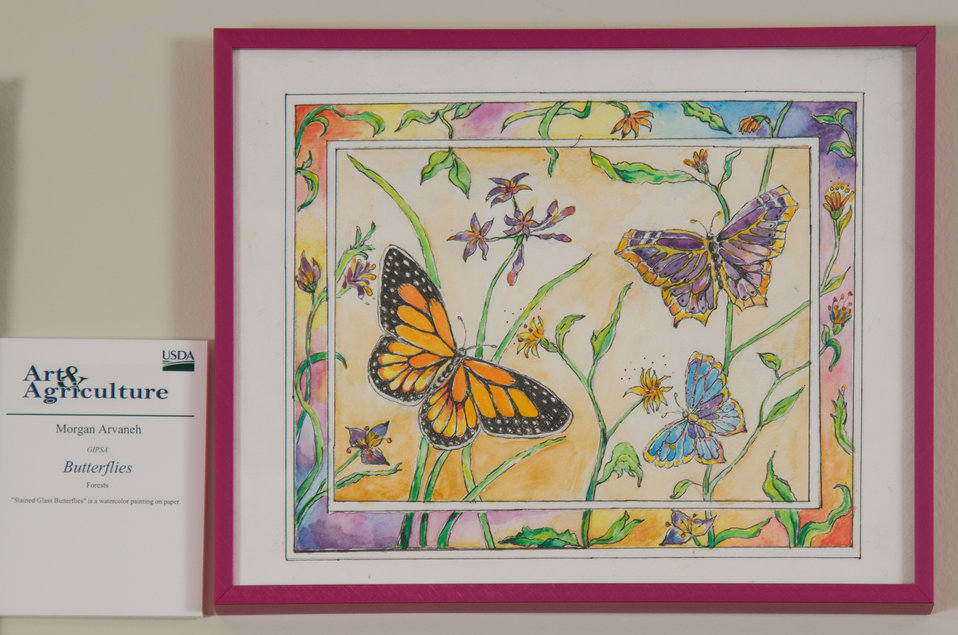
Online Viewer's Choice entries of the 2013 Art & Agriculture, Tuesday, July 9, 2013, in the South Building, Washington, D.C. Themes were expressed by employees from across the department and the contest was open to full-time and part-time USDA employees. Winning artwork will be displayed till the end of the year. U.S. Artistic expression is a creative outlet that is vital for an individual to grow and develop.